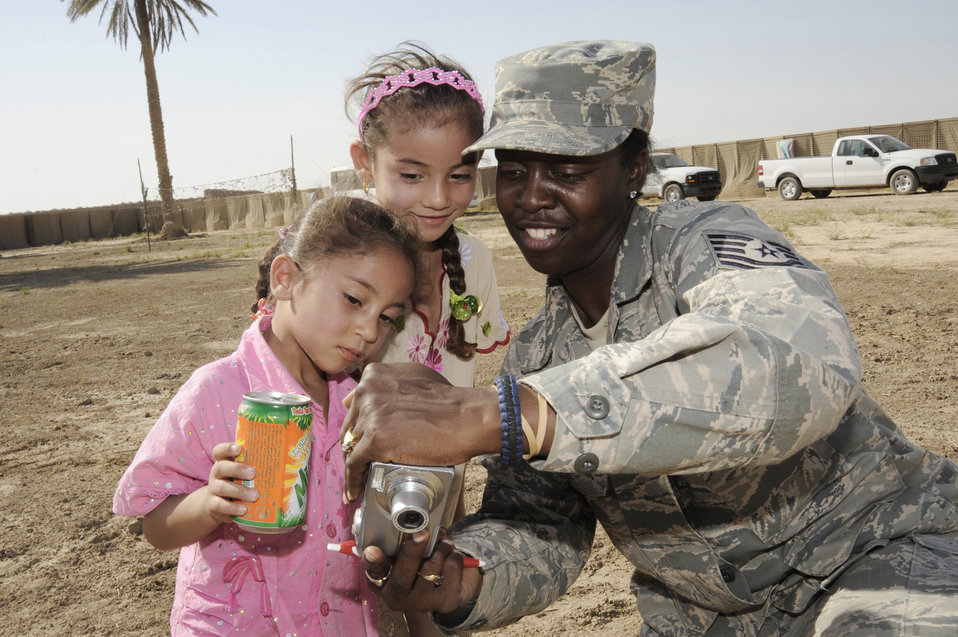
Airmen build ties with Iraqi families

Tech. Sgt. Angelyn McKelley shares photos with Iraqi children July 24 in Baghdad. Forty-five Airmen and Soldiers volunteered to visit and distribute donated items to local Iraqi families as part of the Sather Air Base Good Neighbor Program. Sergeant McKelley is an awards and decorations NCO in charge for Iraq Training and Advisory Mission-Army. Sergeant McKelley is deployed from Hill Air Force Base, Utah, and is a native of Carmel, Calif.